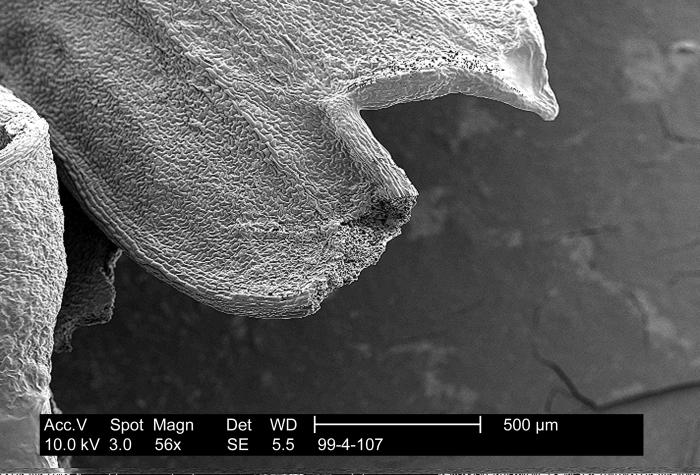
This scanning electron micrograph (SEM) reveals the highly textured surface of a parsley leaf on which bacteria can hide.